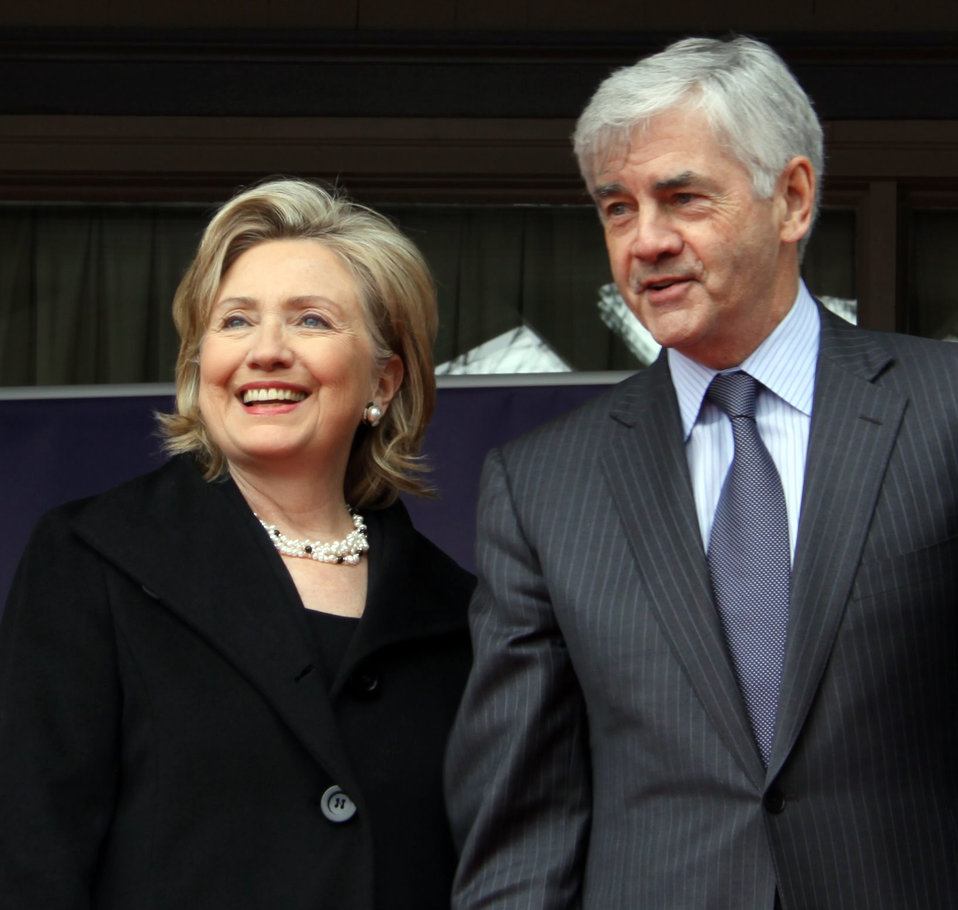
Secretary Clinton Meets With Canadian Foreign Minister

U.S. Secretary of State Hillary Rodham Clinton with Canadian Foreign Minister Lawrence Cannon during the G8 Foreign Ministers Meeting in Ottawa, Canada March 29, 2010.